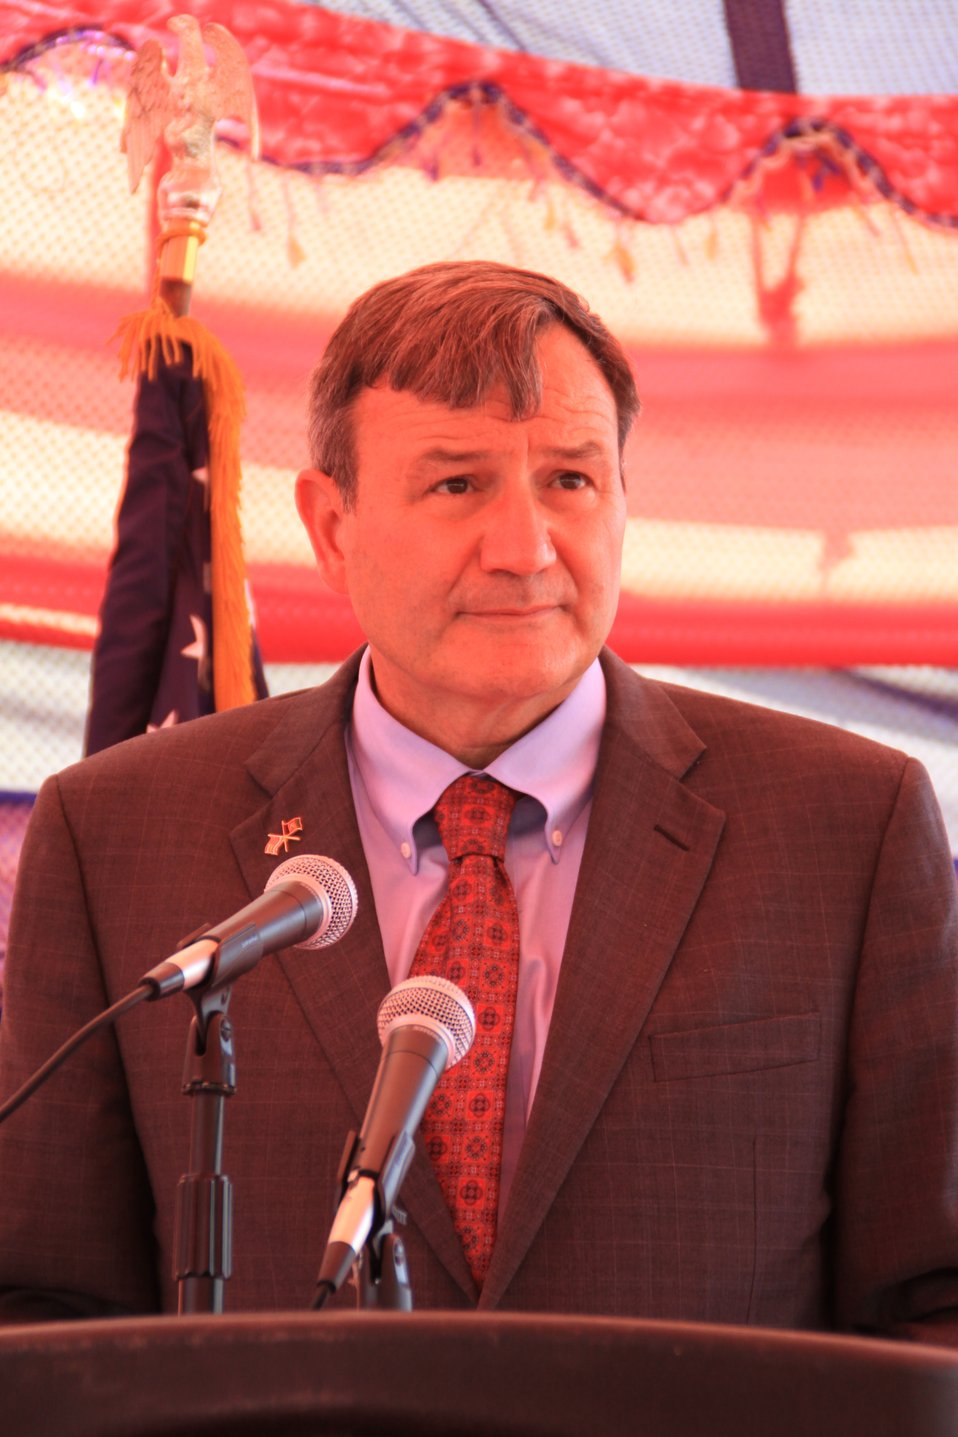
Badam Bagh Farm